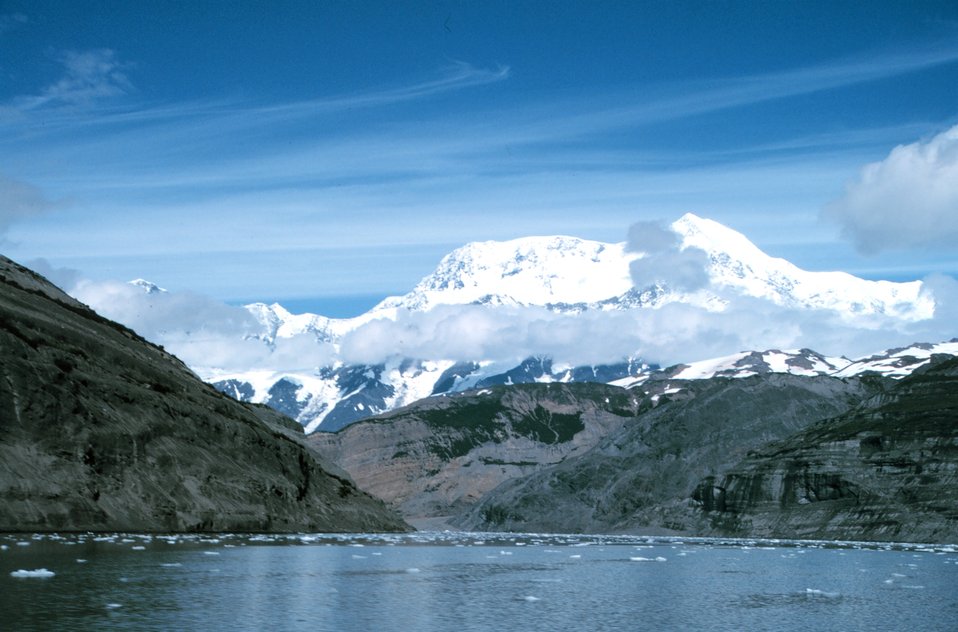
Photo #9 of Mount St. Elias sequence. Mount Saint Elias is one of the largest mountains visible from the sea on the North American continent. It rises to a height of 18,008 feet in a distance of less than 20 miles from sea level at Icy Bay.